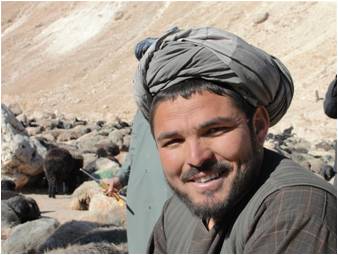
Livestock Vaccinated in Faryab